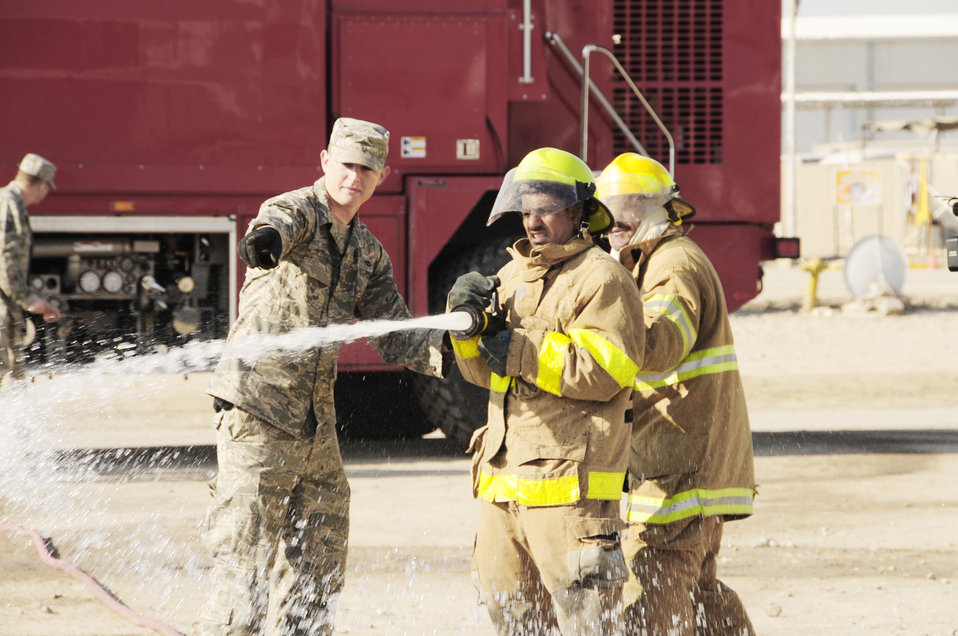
Ali firefighters prepare Iraqis for future

Airman 1st Class Sean Piper provides fire training to Iraqi firefighters, Dec. 28, 2009 at Camp UR, Iraq. The Airmen provide training to the Iraqi Army fire department three times a week to ensure Iraqi firefighters are self sufficient. Airman Piper is from the 407th Expeditionary Civil Engineer Squadron fire department.